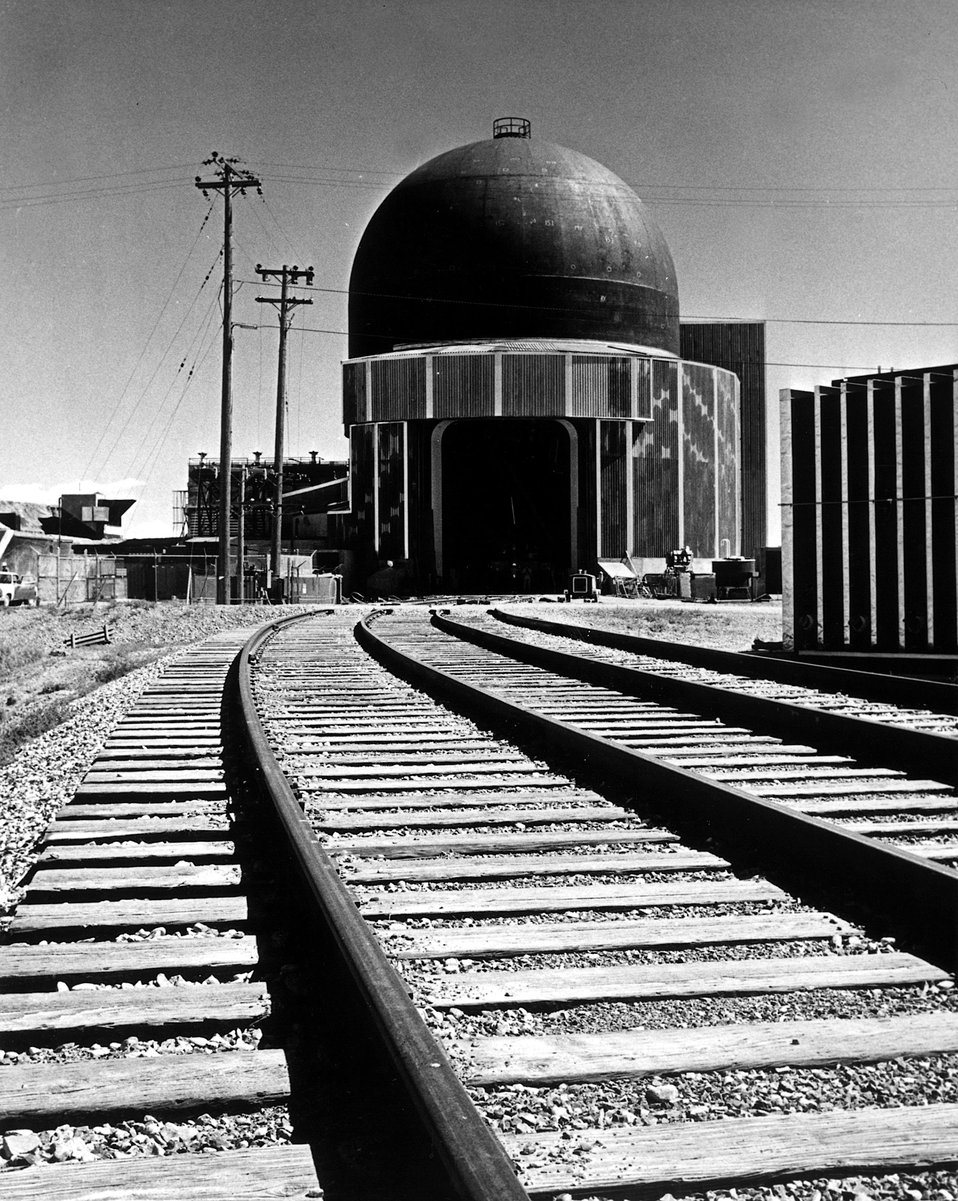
A view of the railroad tracks entering the Loss-of-Fluid-Test (LOFT) facility containment building before the LOFT Mobile Test Assembly (MTA) was pushed into the facility on November 2, 1973. Circa 1974.